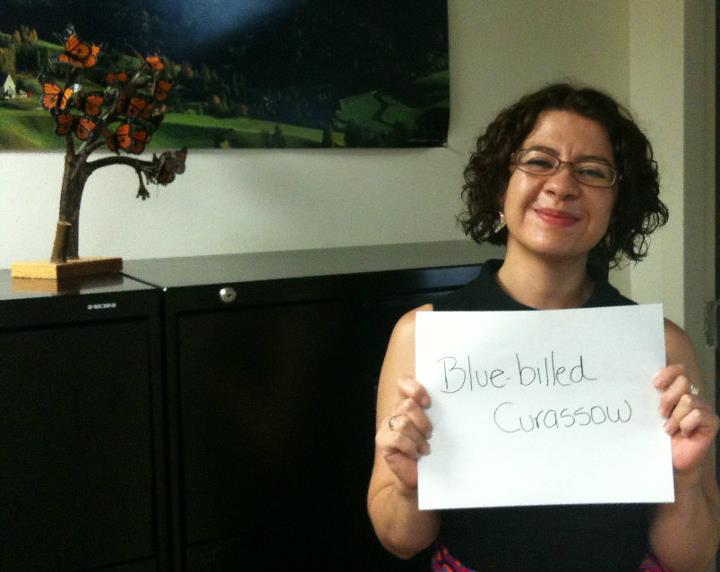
Amanda Gonzales, 'Blue-Billed Curassow,'

International Affairs participates in FFI's In Our Hands campaign